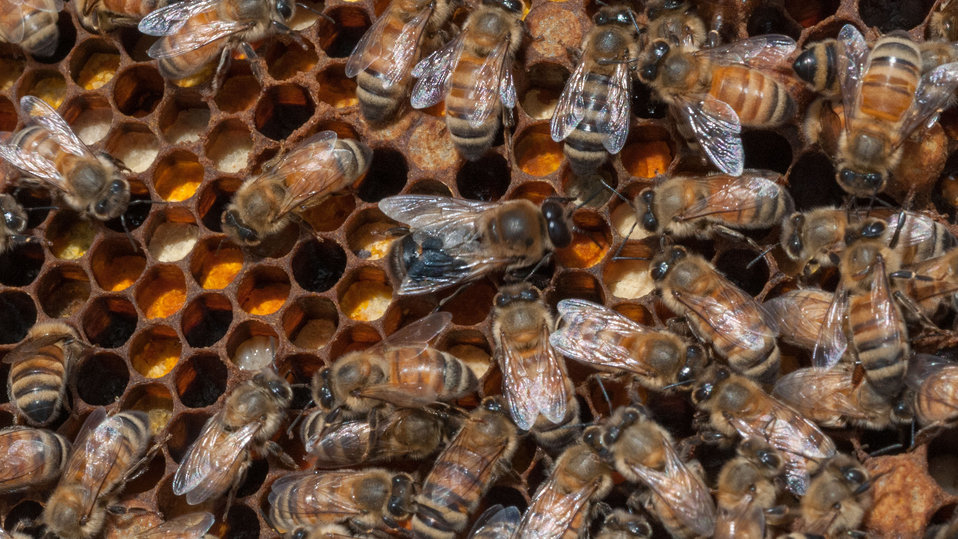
A queen Italian honey bee (large bee near center) in the U.S. Department of Agriculture People's Garden Apiary, atop the headquarters' Whtten Building in Washington, D.C., on Wednsday, May 22, 2013. Bees are one of nature’s many pollinators for flowers and crops and are crucial in production for fruits and vegetables. Some of the crops pollinated by bees are apples, squash, and almonds. Honeybees are responsible for pollinating approximately $15 billion worth of crops in the U. S. each year. The U. S. Department of Agriculture (USDA) Agricultural Research Service (ARS) and Natural Resource Conservation Service (NRCS) are working on ways to mitigate the decline of the bee population by coordinating pollination research, conservation, and education among USDA agencies and their partners.